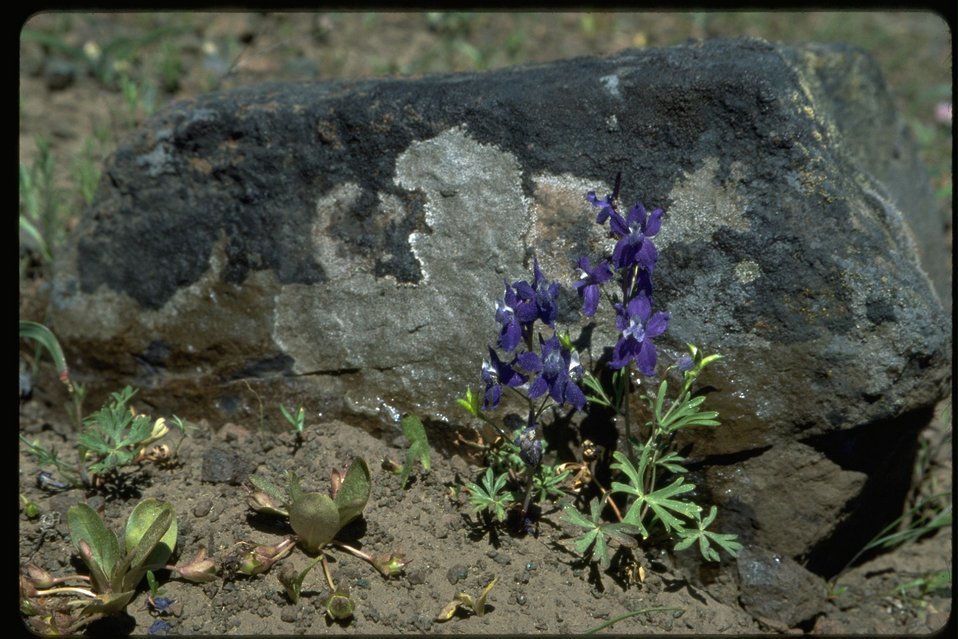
Medium shot of Larkspur wildflower.